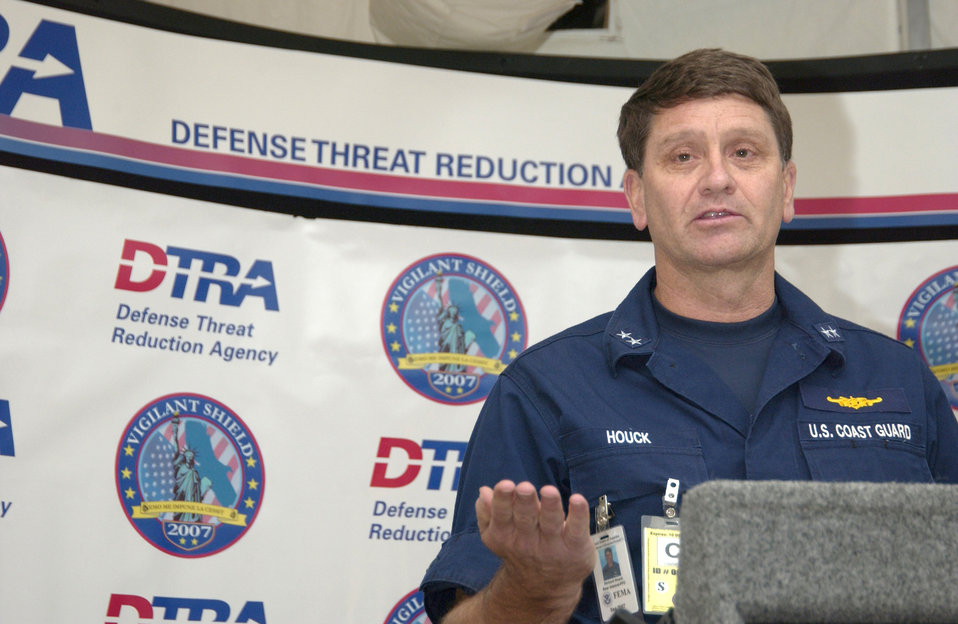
Vigilant Shield 07

Rear Adm. Richard Houck fields questions at a press conference Dec. 4 at Davis-Monthan Air Force Base, Ariz., during Vigilant Shield 07. Vigilant Shield 07 is a joint nuclear weapon accident exercise designed to train Department of Defense and federal agencies on response efforts as a cohesive team. The exercise involved a variety of agencies representing the county, state and federal governments. Admiral Houck is the principal federal official taking part in Vigilant Shield 07.